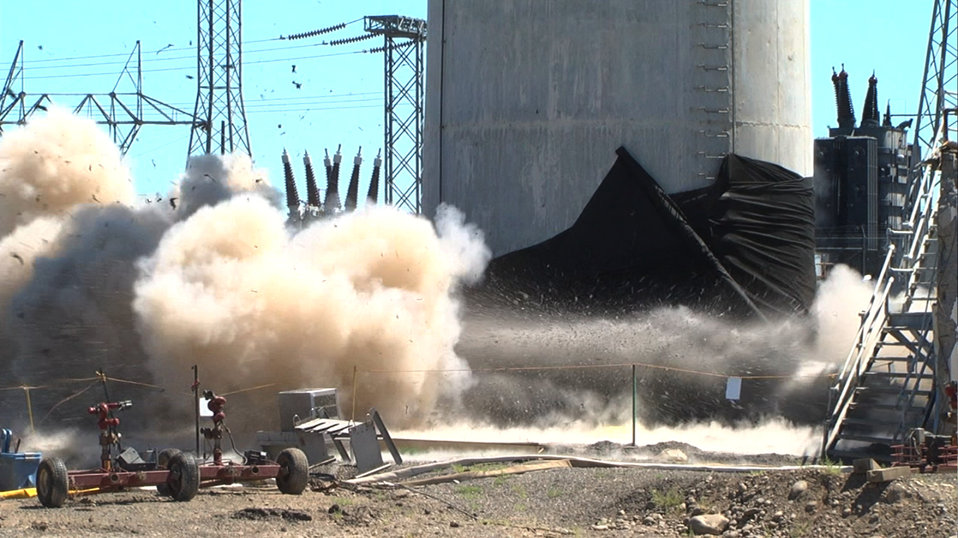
Detonation at the base of 116KE

Workers safely demolished a 175-foot-high exhaust stack at the Hanford Site in southeastern Washington state, a project supported by $420,000 in Recovery Act funds.